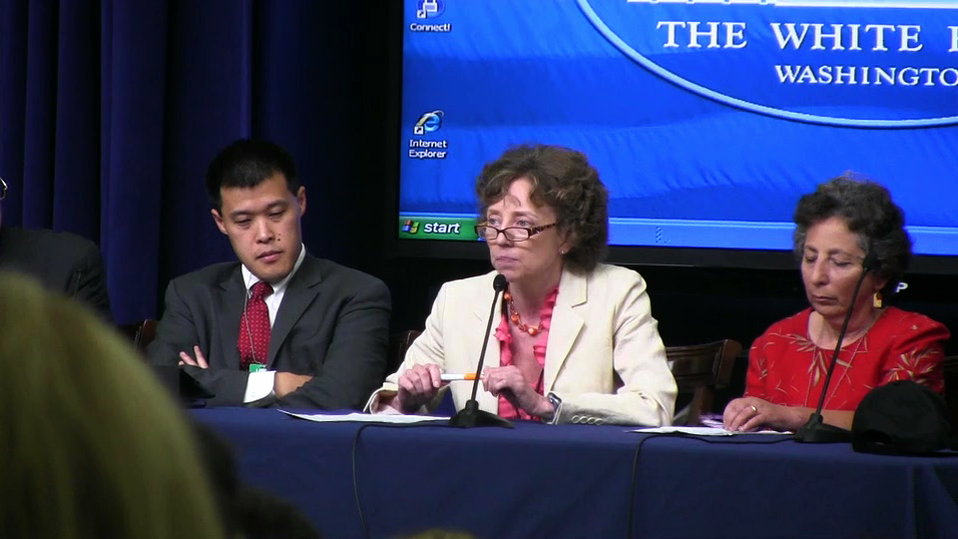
WHDpanel3